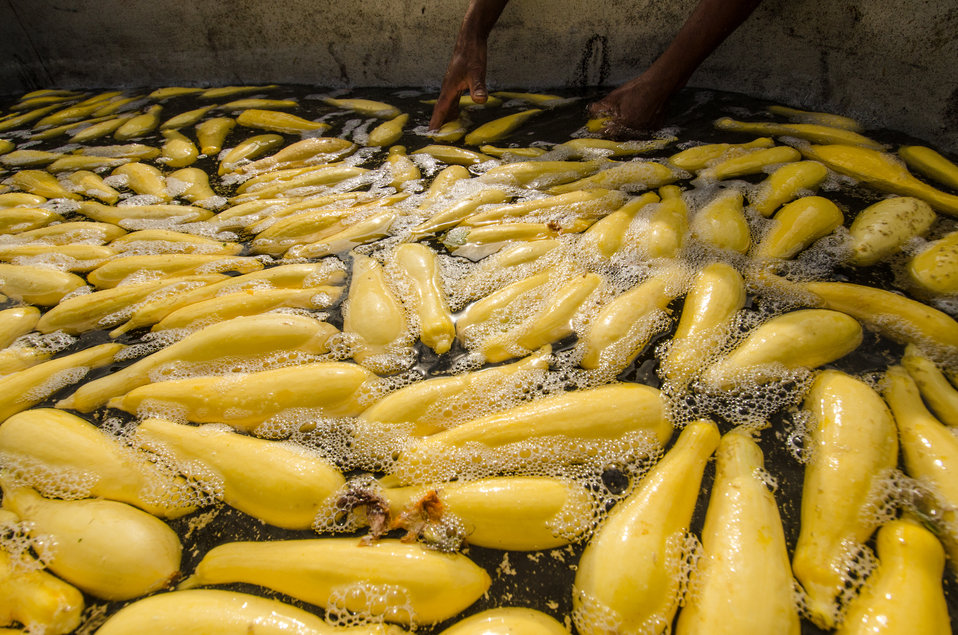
Migrant workers rinse and pack just-picked yellow squash on a processing trailer at Kirby Farms in Mechanicsville, VA on Sep. 20, 2013. Kirby Farms is a third-generation family farm that covers 500 acres, and generates produce and grains on a year-around operation.